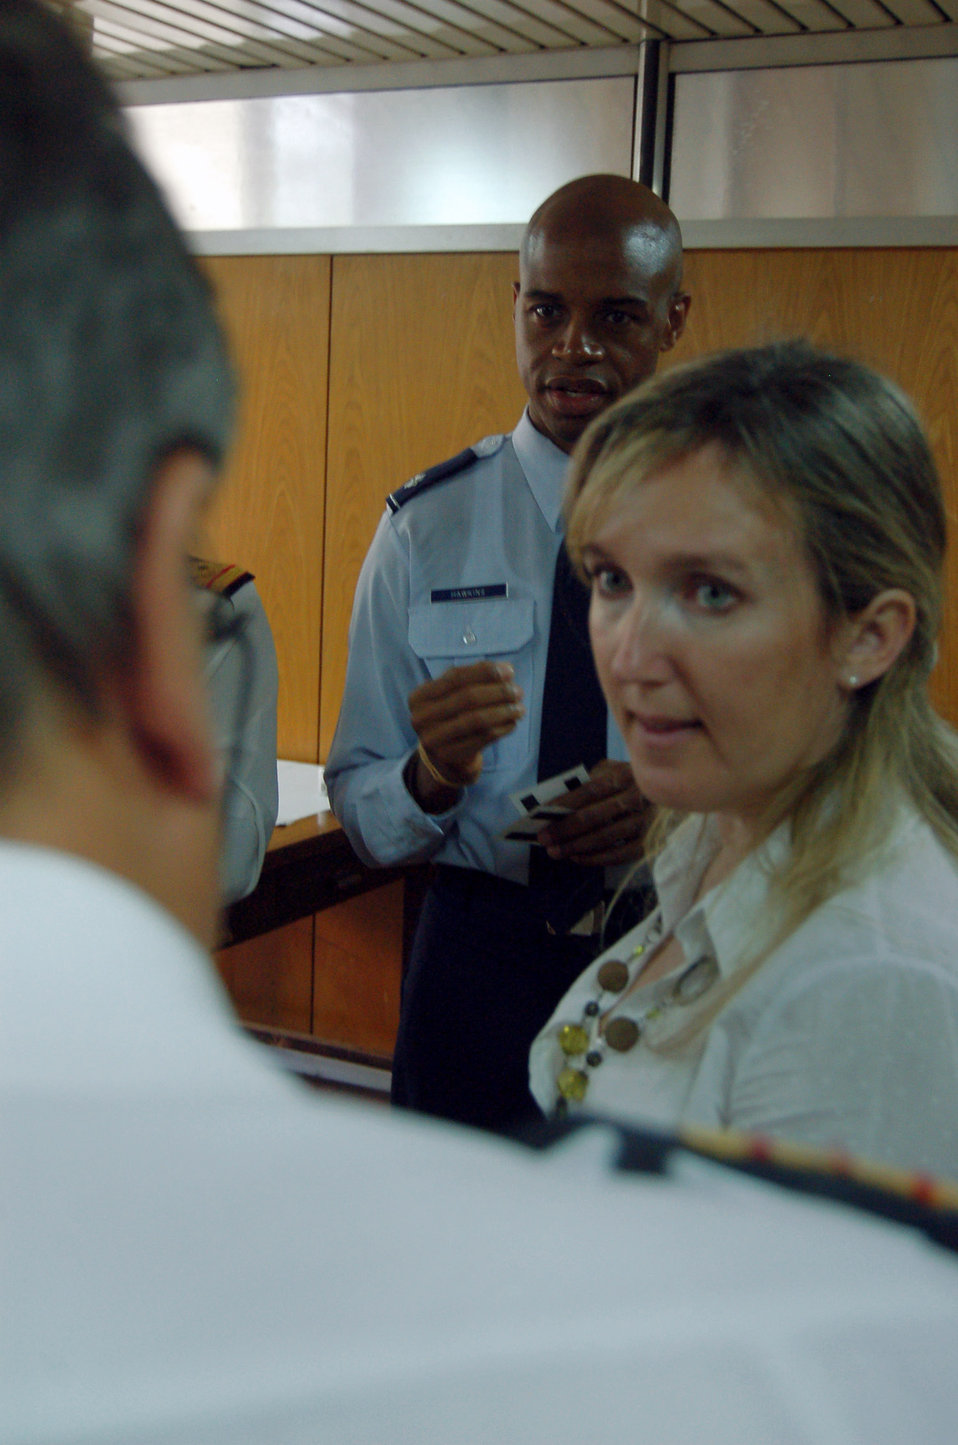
Forces combine to share disaster response techniques

Lt. Col. Claude Hawkins listens to an Argentinean military medical expert during a table-top disaster response exercise Nov. 5 in Buenos Aires, Argentina. Colonel Hawkins is a plastic surgeon from Travis Air Force Base, Calif.